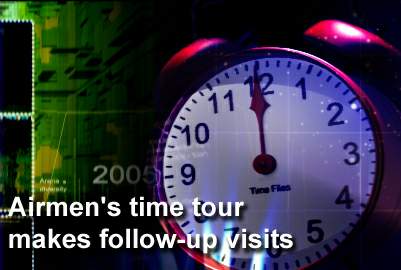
Airmen's time tour makes follow-up visits

A team, chartered by Lt. Gen. Richard Y. Newton III, the deputy chief of staff for manpower and personnel, will visit units at 11 Air Force installations as a follow up to last year's review that revealed numerous strains on Airmen's time.